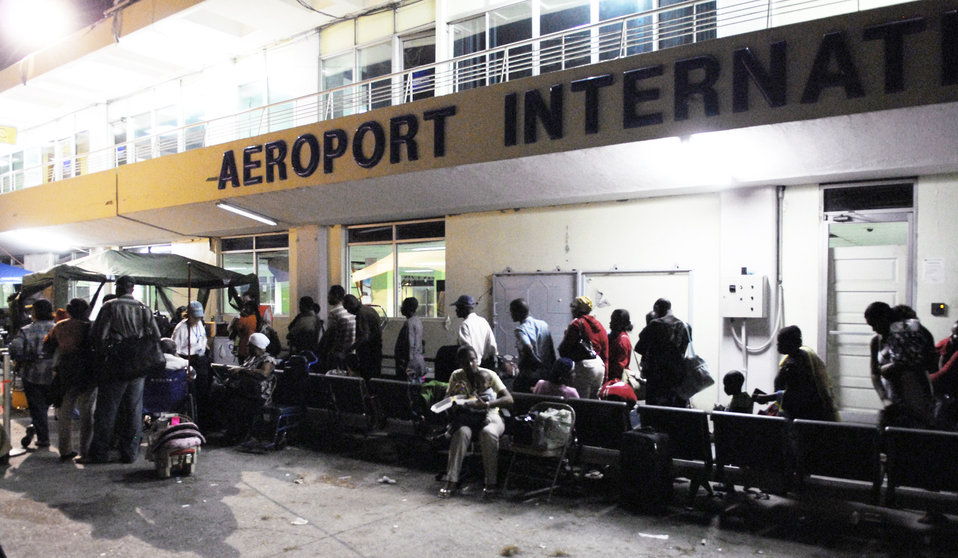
AMC provides airlift for Americans in Haiti

A line of American citizens wait clearance from the U.S. State Department to board Air Force aircraft on the ramp at the Toussaint L'Ouverture International Airport in Port-au-Prince, Haiti, Jan. 19, 2010. The State Department provided passage for displaced U.S. citizens to Orlando International Airport in Florida.